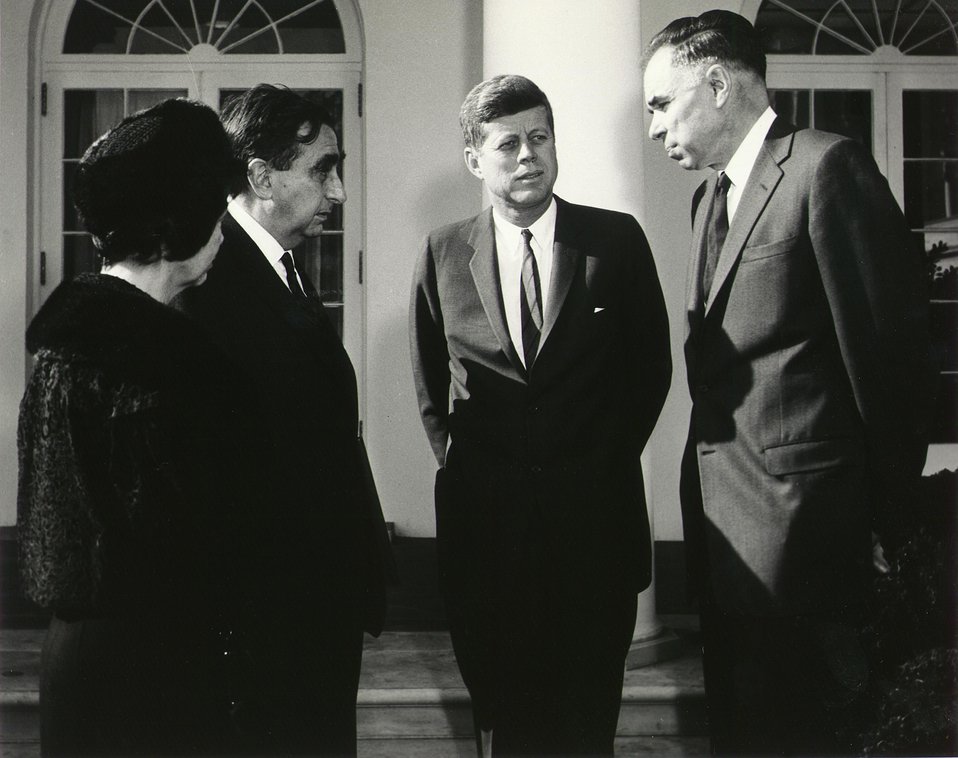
Fermi Award 1962. Teller, Seaborg, President Kennedy, Mrs. Teller.